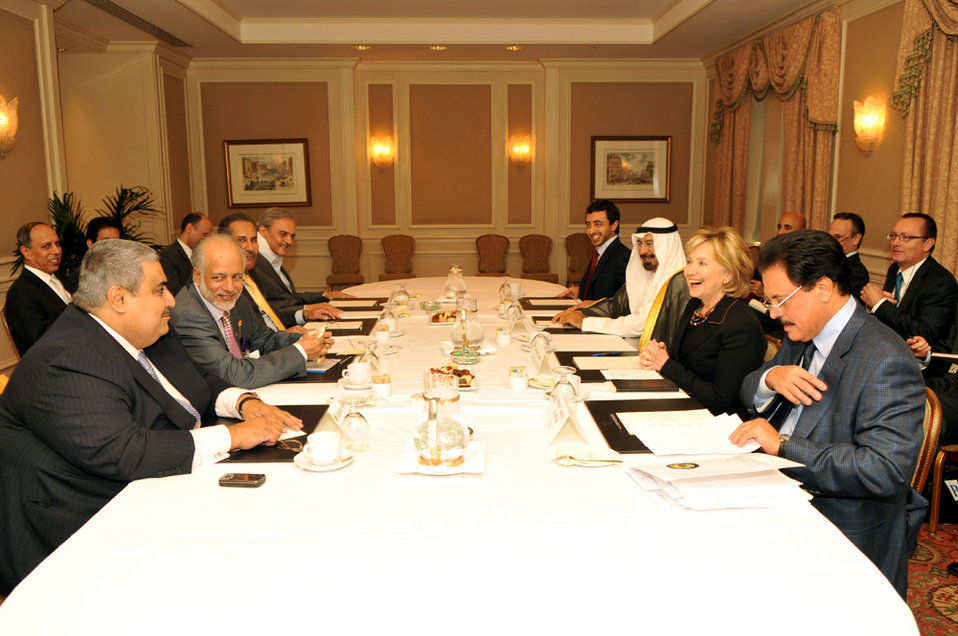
UNGA 2009: Secretary Clinton Meets With Gulf Cooperation Council

U.S. Secretary of State Hillary Rodham Clinton meets with members of the Gulf Cooperation Council at the Waldorf Astoria hotel in New York City, New York September 26, 2009.